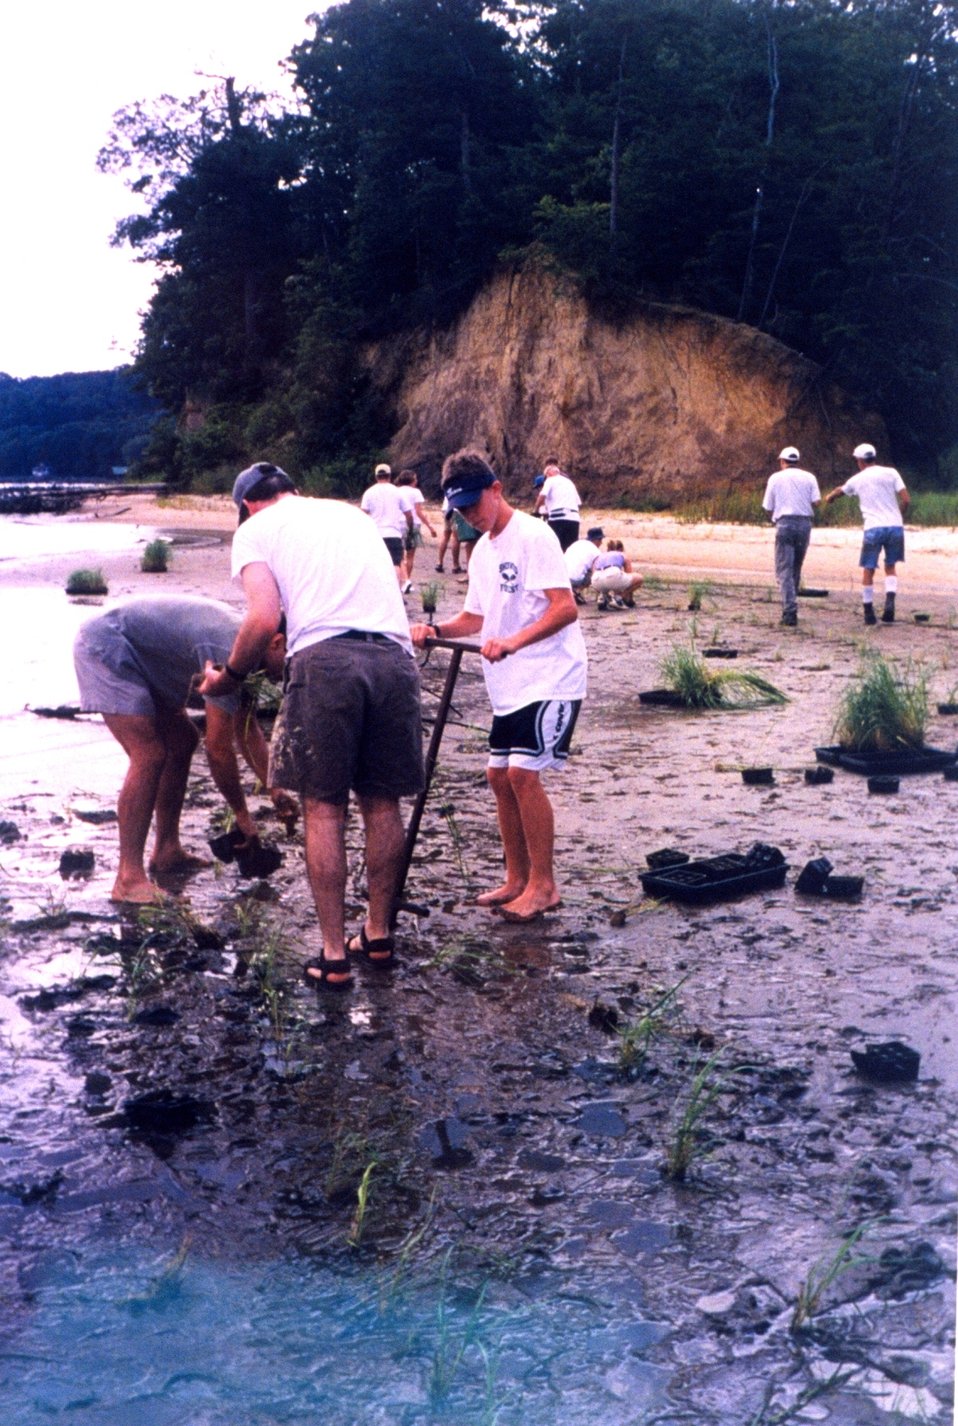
Replanting marsh grass in an effort to protect and rebuild this beach near Annapolis.